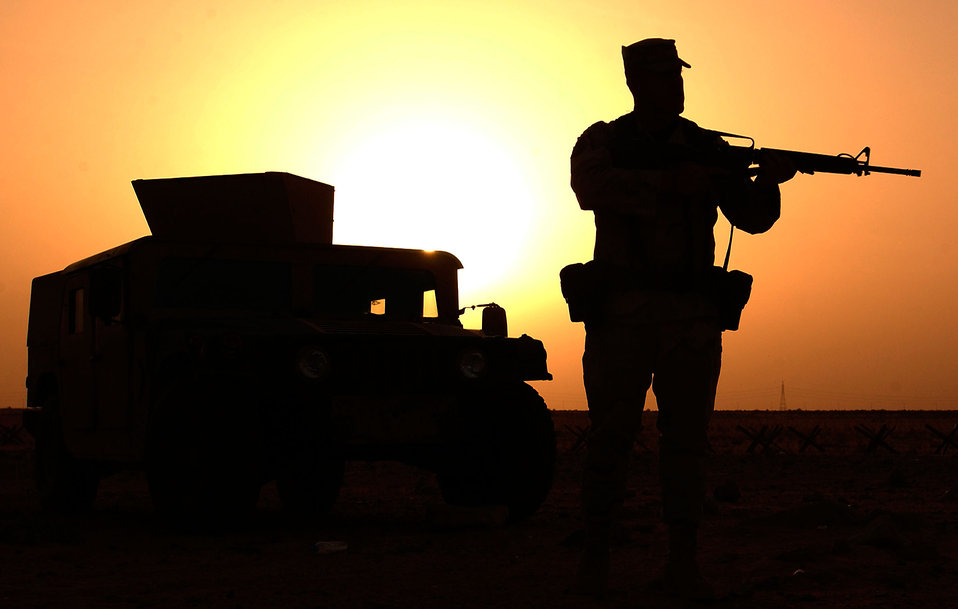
Secure sunset

OPERATION IRAQI FREEDOM -- Tech. Sgt. Frank Brown, a security forces craftsman deployed from the 12th Security Forces Squadron, Randolph Air Force Base, Texas, to the 363rd Expeditionary Security Forces Squadron, scans a perimeter fence line during security check on April 4. The 363rd ESFS members work around the clock performing force protection measures, air base defense, and protecting personnel in support of Operation Iraqi Freedom at a forward deployed location in southwest Asia.